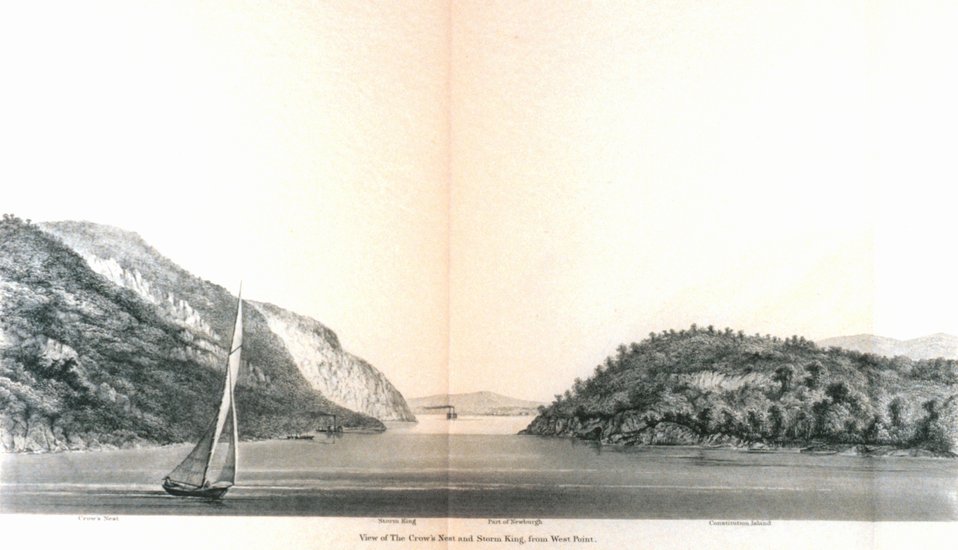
View of the Crow's Nest and Storm King from West Point. On the Hudson River. In : Atlantic Local Coast Pilot Sub-Division 13 South Coast of Long Island New York Bay and Hudson River 1880. P. 604. Library Call Number VK981.A3 1879 Sub-13 2nd ed. 1880.